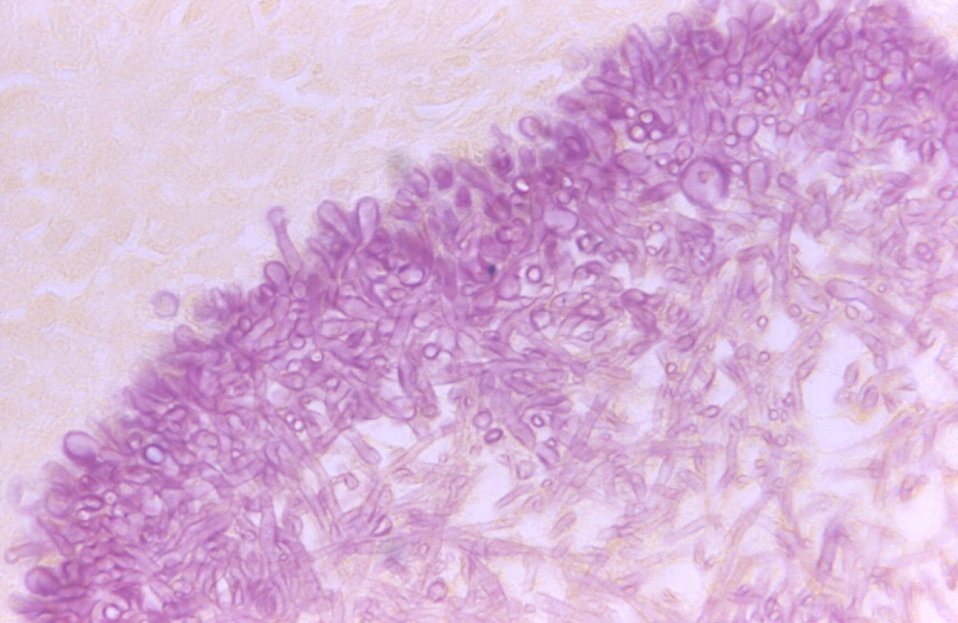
Under a relatively low magnification of 500X, this Gridley-stained photomicrograph revealed some of the ultrastructural morphology displayed by a mycetoma caused by Acremonium sp. fungal organisms.